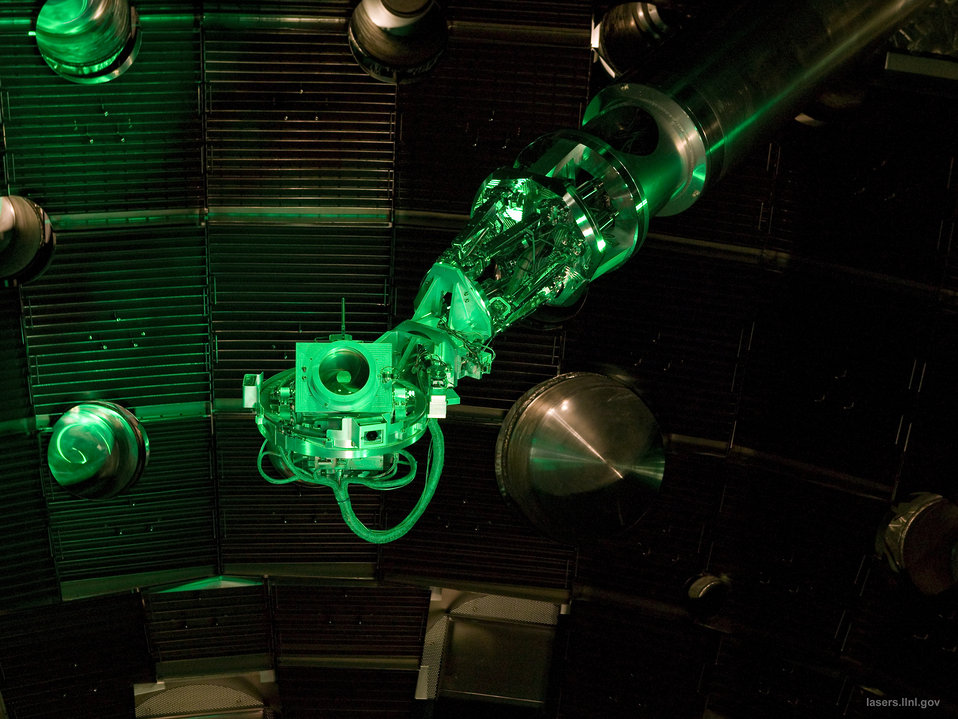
NATIONAL IGNITION FACILITY'S FINAL OPTICS INSPECTION SYSTEMS, WHEN EXTENDED INTO THE TARGET CHAMBER FROM A DIAGNOSTIC INSTRUMENT MANIPULATOR, CAN PRODUCE IMAGES OF ALL 192 BEAMLINE FINAL OPTICS ASSEMBLIES.

The National Ignition Facility at LLNL enables key programs and technologies that support DOE's National Nuclear Security Administration Defense Programs and LLNL missions, ensuring that the national's weapons remain safe, secure and reliable. NIF, one of the cornerstones of DOE's stockpile stewardship program, will integrate the inertial confinement fusion program into the overall stockpile stewardship program and foster the development of associated laser technologies.